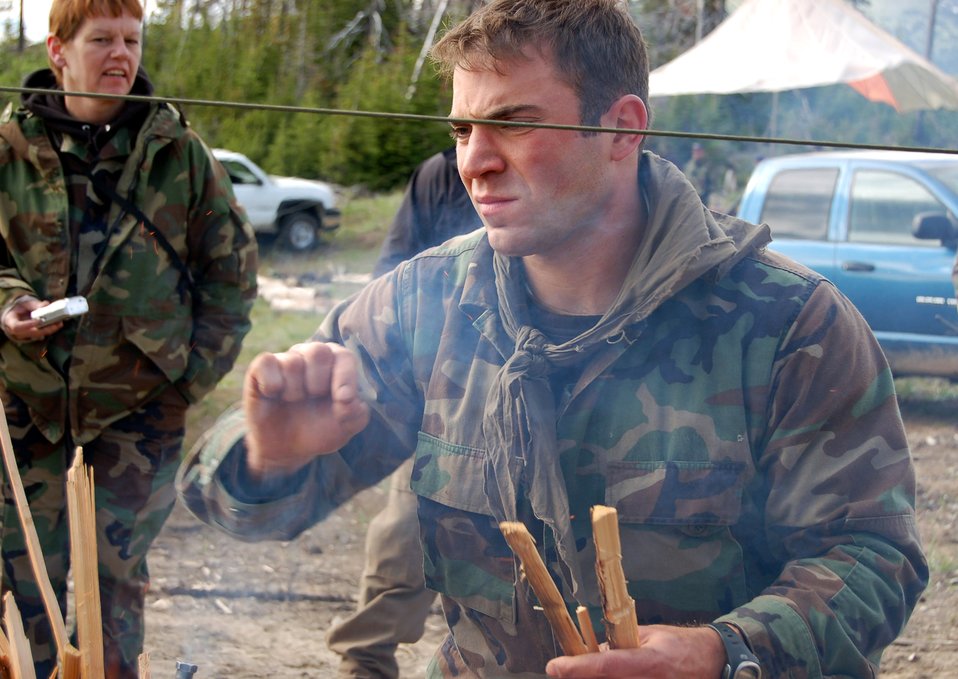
Ready for the challenge

With only the materials made available to him, Staff Sgt. Matthew Zimmer, a Survival, Evasion, Resistance, and Escape specialist and water survival instructor, attempts to build a fire large enough to burn through a three-foot-high parachute cord June 12. This was one of the challenges faced by competitors during the SERE Challenge at Fairchild Air Force Base, Wash.